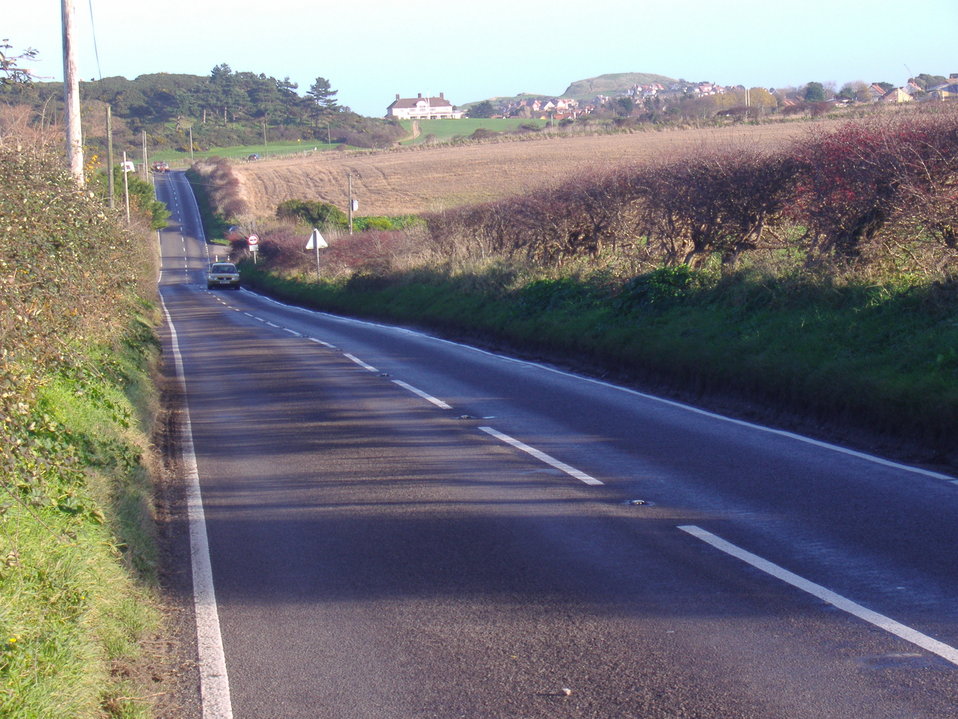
A Digital Photograph of the A149 at Sheringham by M Hobbs 29/11/2006